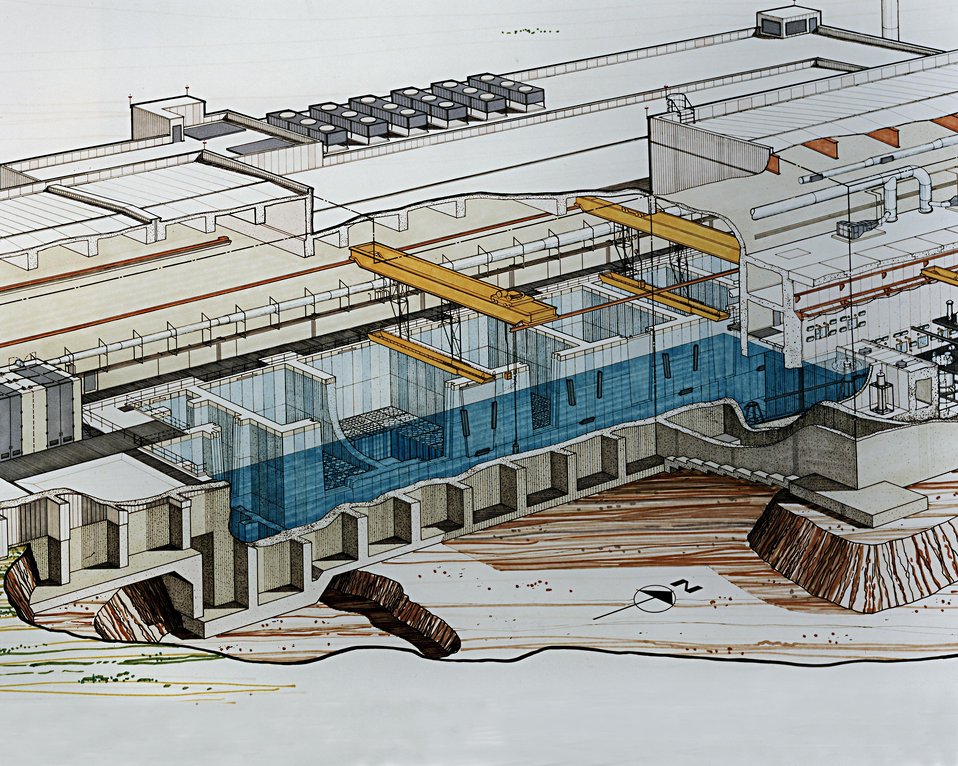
ARTIST'S CUTAWAY DRAWING OF PART OF THE FLUORINEL FACILITY.

THE FLUORINEL FACILITY WILL INCLUDE AREAS FOR THE RECEIPT, HANDLING, STORAGE, AND DISSOLUTION OF SPENT REACTOR FUEL. THE DISSOLVED SOLUTION WILL BE TRANSFERRED TO EXISTING FACILITIES AT THE IDAHO FUEL PROCESSING FACILITY FOR RE- COVERY OF CONTAINED URANIUM. THE FACILITY WILL PROCESS A WIDE VARIETY OF SPENT FUELS, INCLUDING NAVAL, TEST, AND RESEARCH REACTOR FUELS, TO INCREASE THE AMOUNT OF URANIUM RESOURCE AVAILABLE TO THE UNITED STATES.